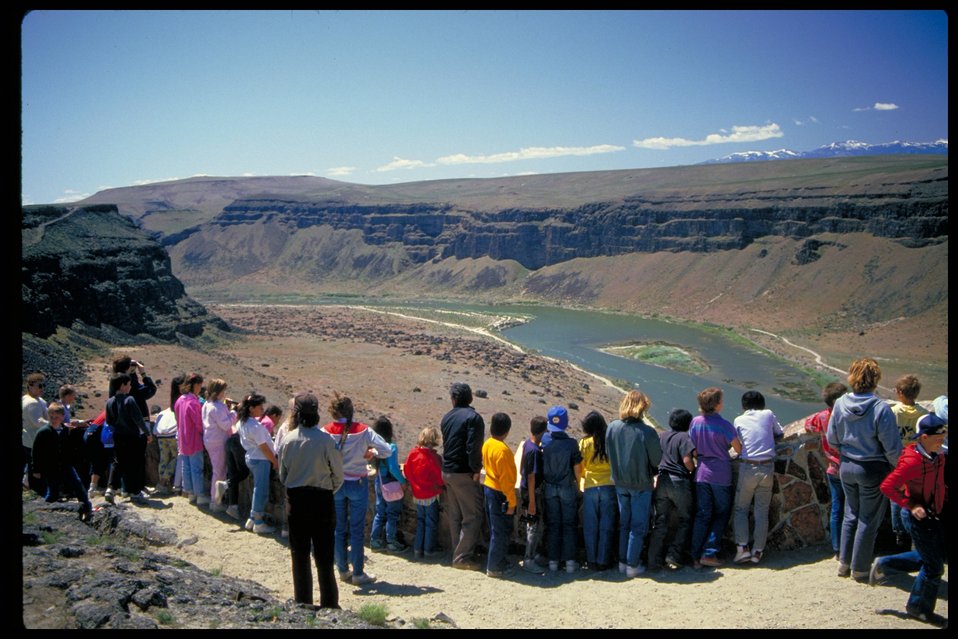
Dedication Point Birds of Prey National Conservation Area BOP Owyhee Field Office LSRD Lower Snake River District